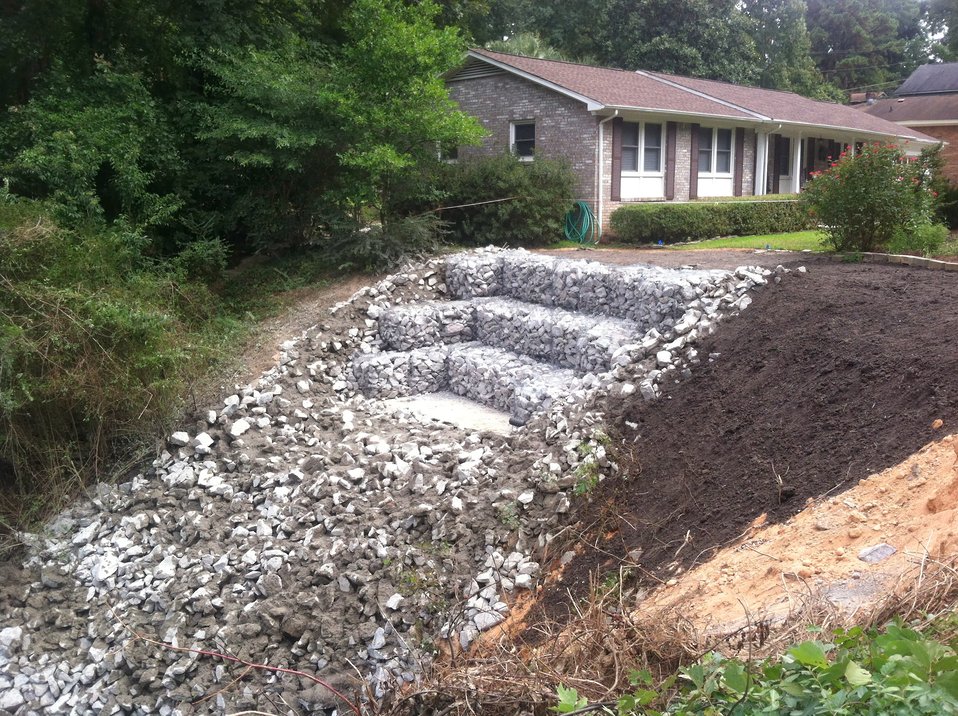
Healing 1

The U.S. Department of Agriculture’s (USDA) Natural Resource Conservation Service (NRCS) Emergency Watershed Protection Program helped tame a major erosion problem and save a home in West Columbia, S.C.